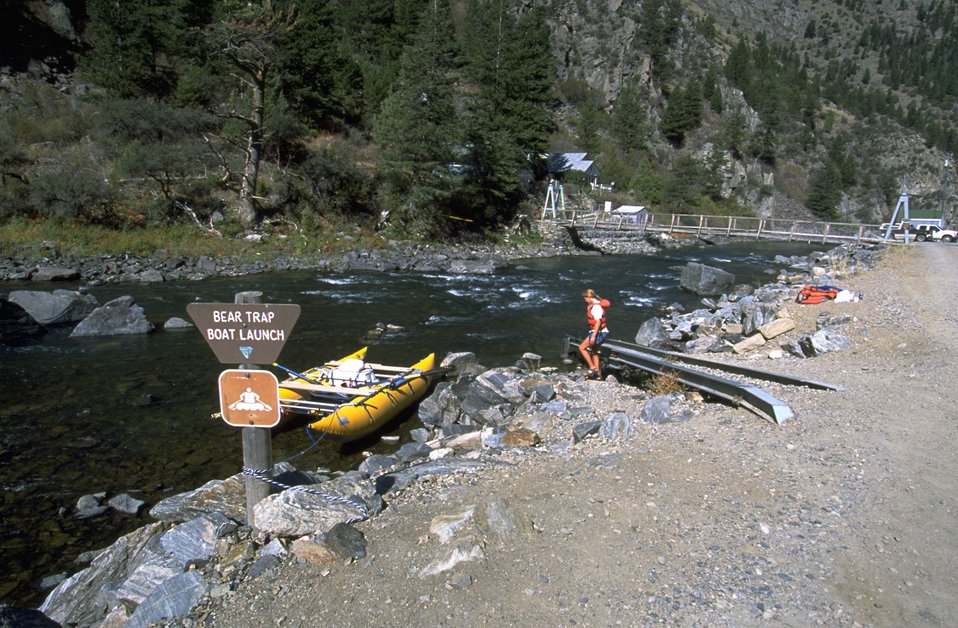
Cataraft Lauching at the Bear Trap Boat Launch